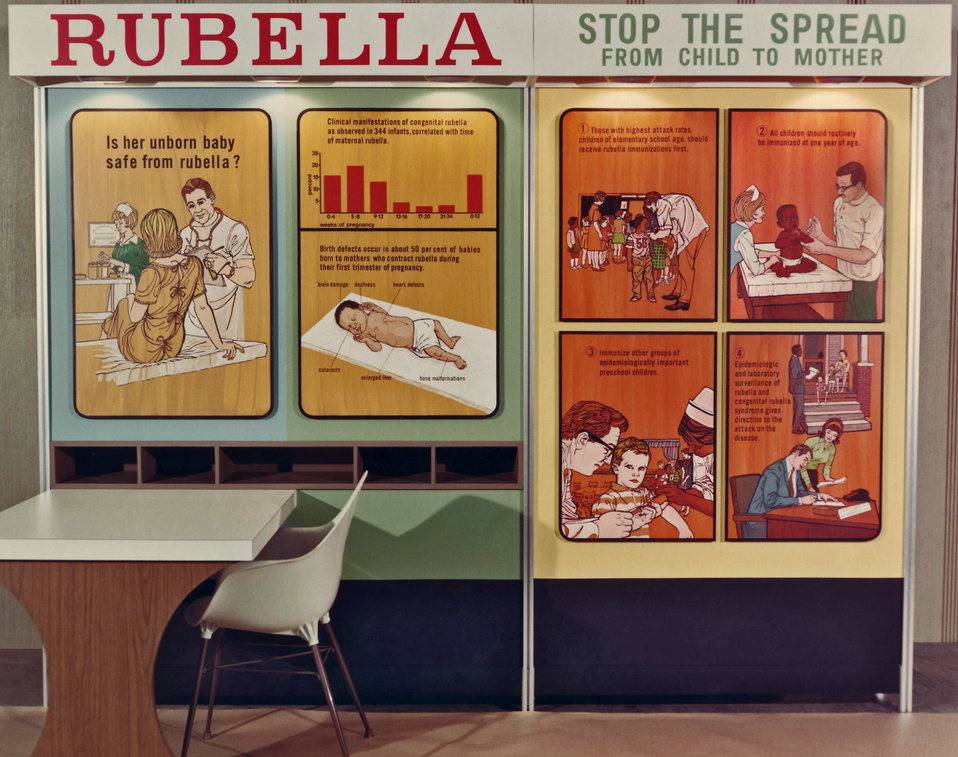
This photograph showed a display used to educate the public on Rubella vaccination and the mother to fetus transmission of this virus.